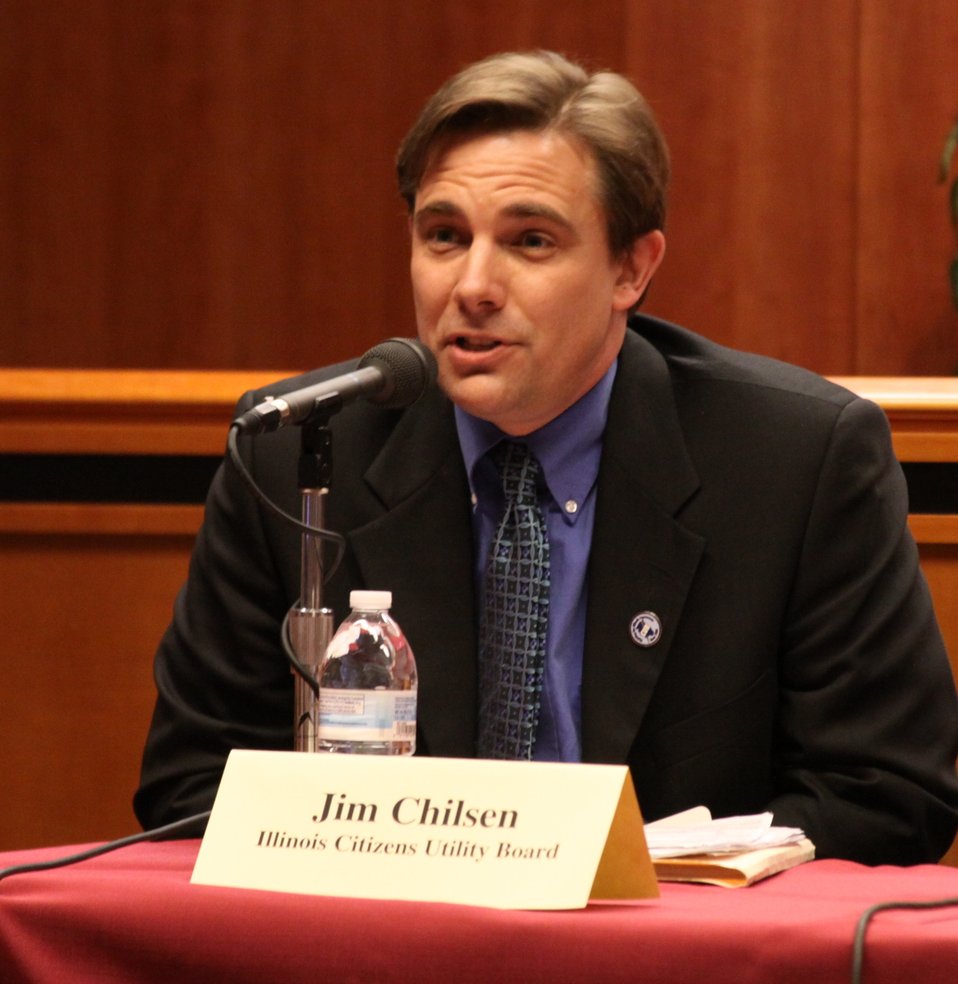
April 17, 2013 Bill Shock and Cramming Workshop